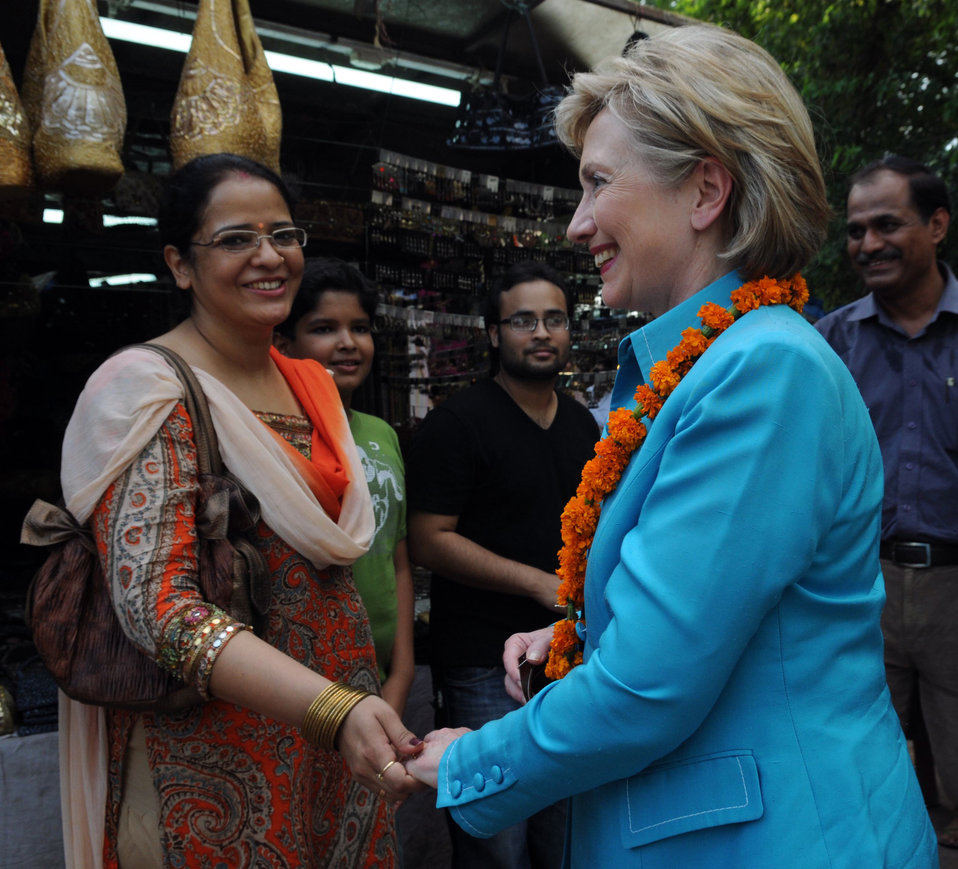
Secretary Clinton Visits Local Shops in New Delhi

U.S. Secretary of State Hillary Rodham Clinton shops at Dilli Haat, New Delhi, India July 19, 2009.